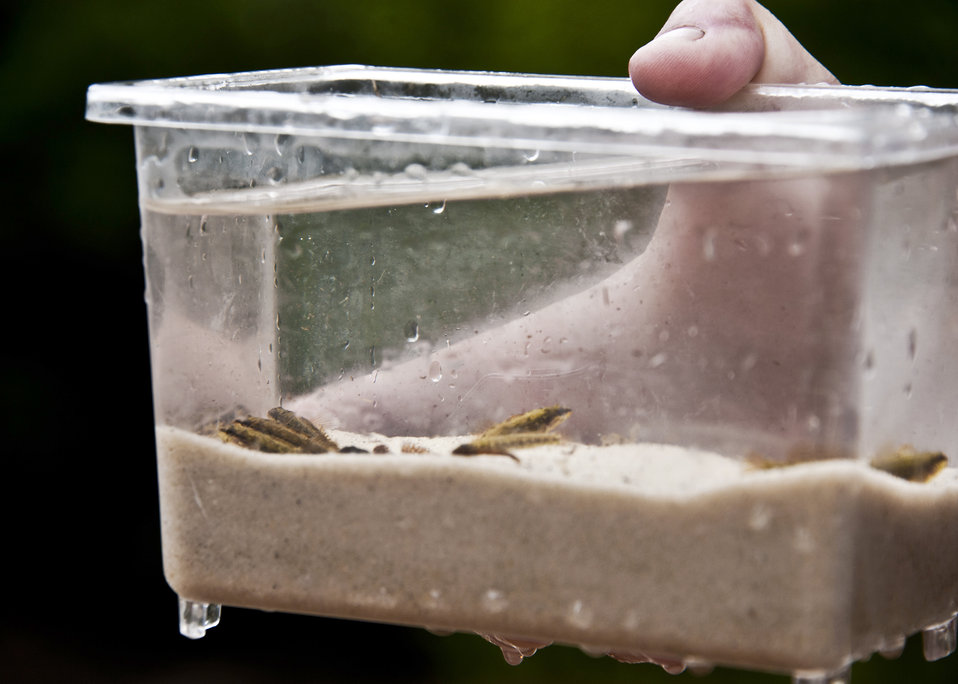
Eglin AFB threatened species

The Okaloosa darter, whose habitat is almost exclusively on the Eglin Air Force Base ranges in Northwest Florida, became the first fish on Defense Department land to be reclassified from